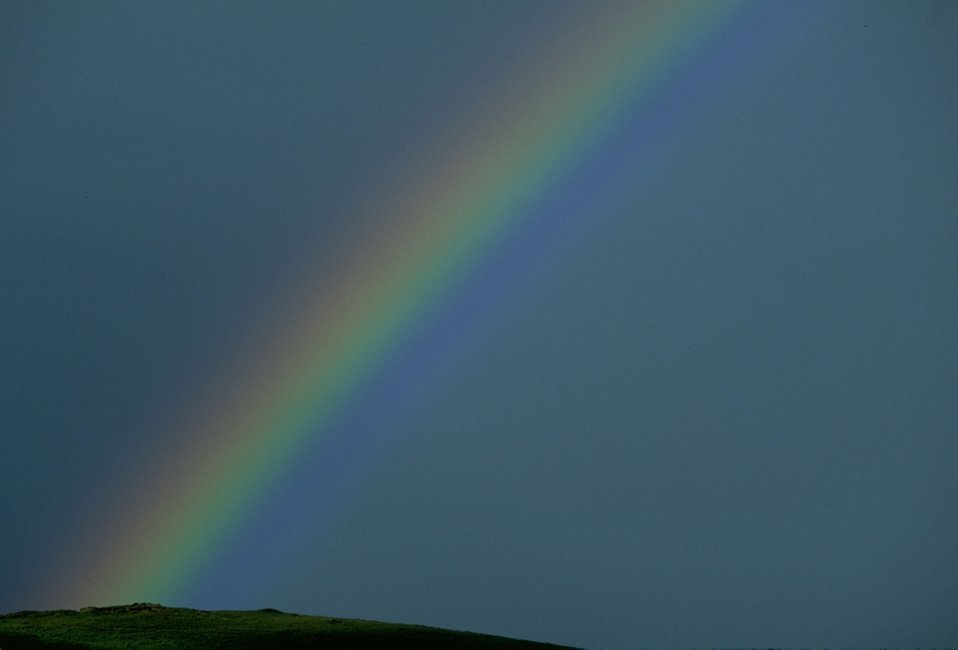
Rainbow